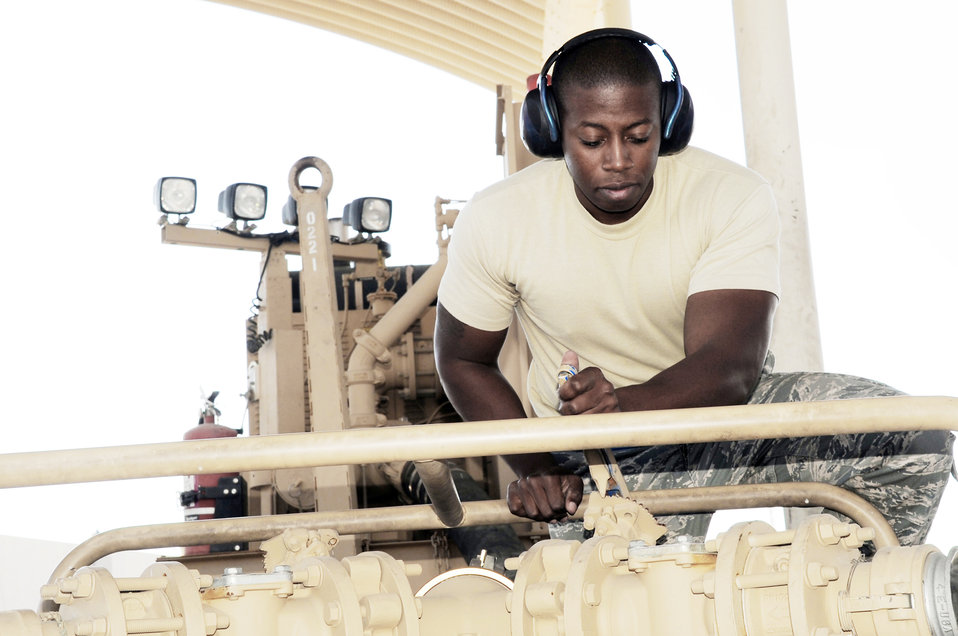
Construction begins on new fuel pipeline at Southwest Asia base

Senior Airman Brandon Bailey adjusts an R-18 fuel pump during operations at the fuel off-load facility for the 380th Air Expeditionary Wing Jan. 6, 2010, at a base in Southwest Asia.